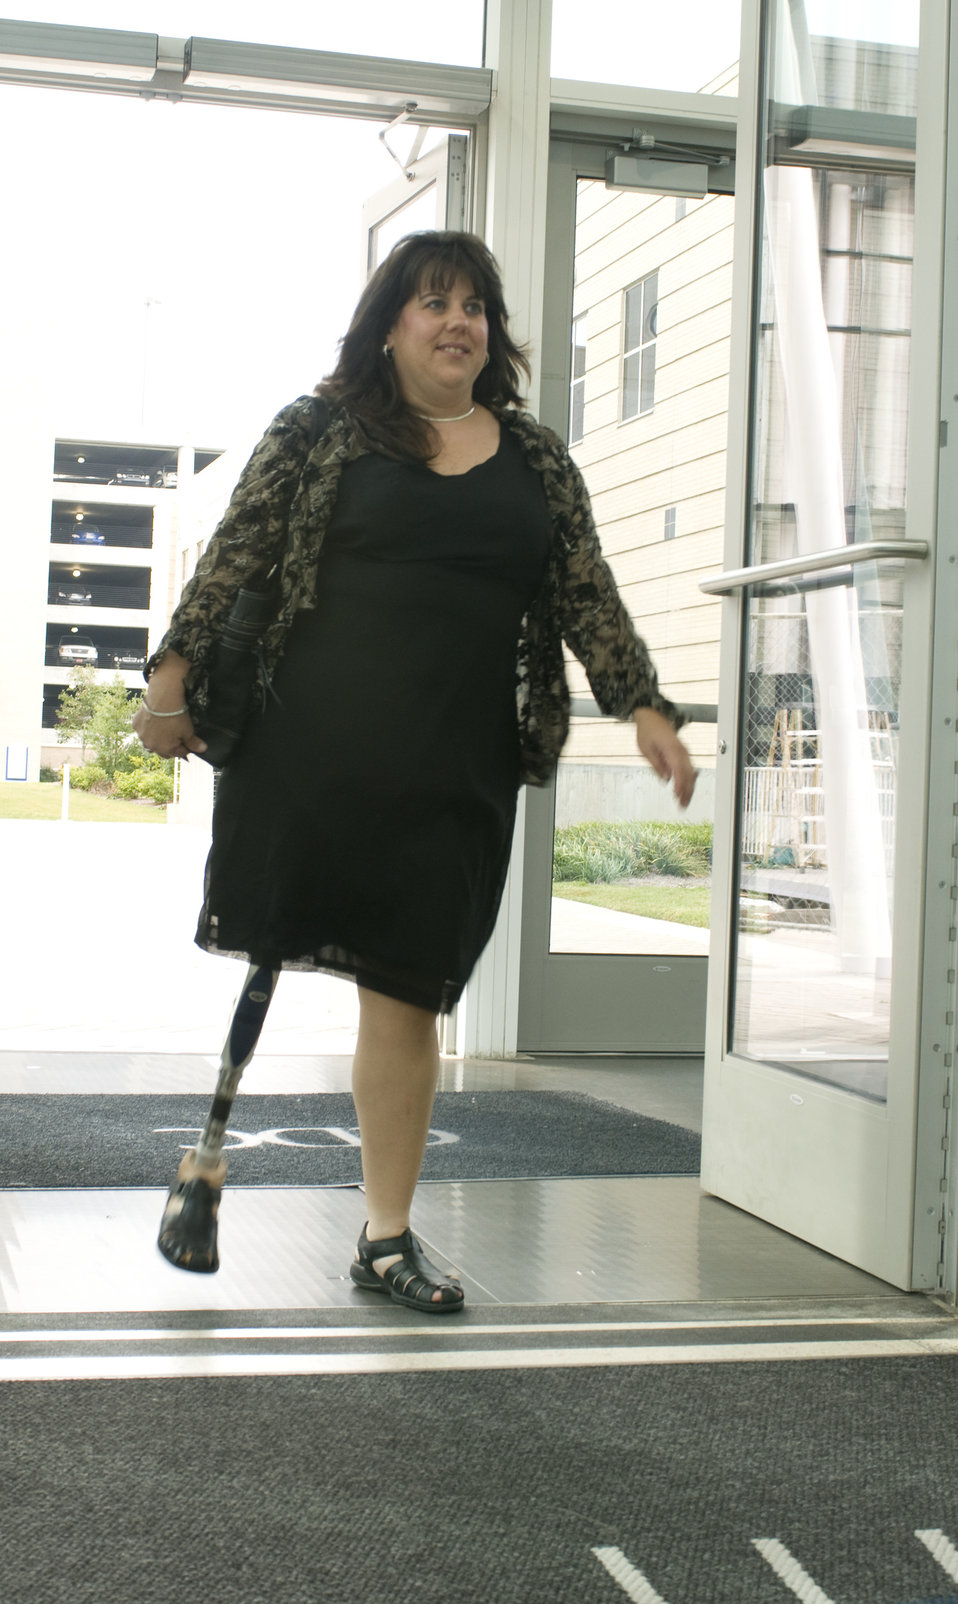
The woman depicted here was in the process of entering a building on one of the Centers for Disease Control and Prevention's (CDC) campuses. She was walking with the use of a right, lower limb prosthesis, entering this building through mechanized doors, which had been equipped with the capability to assist all who entered, with, or without a disability.